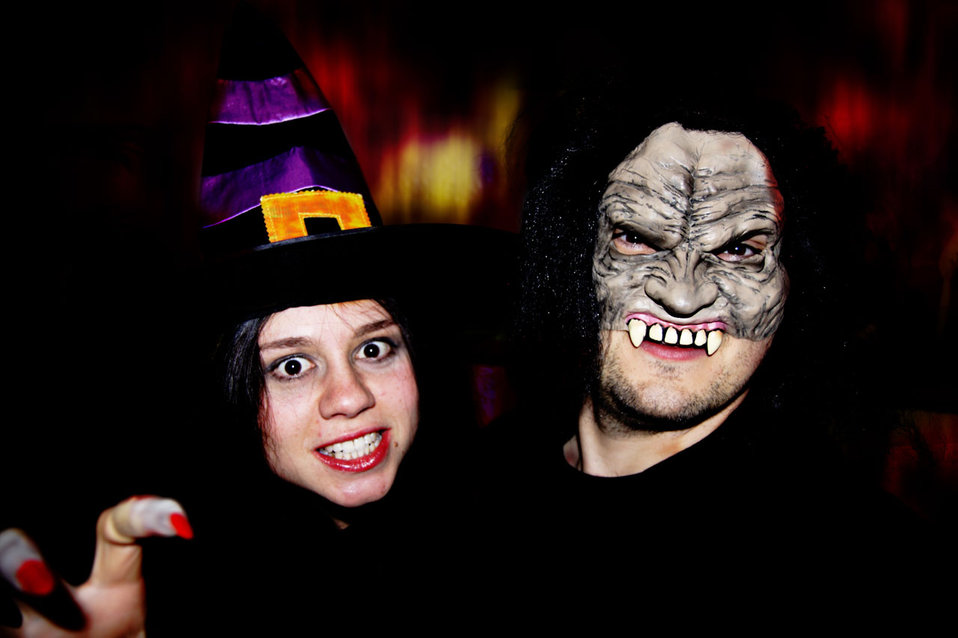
Halloween people

Beast and witch on halloween night.